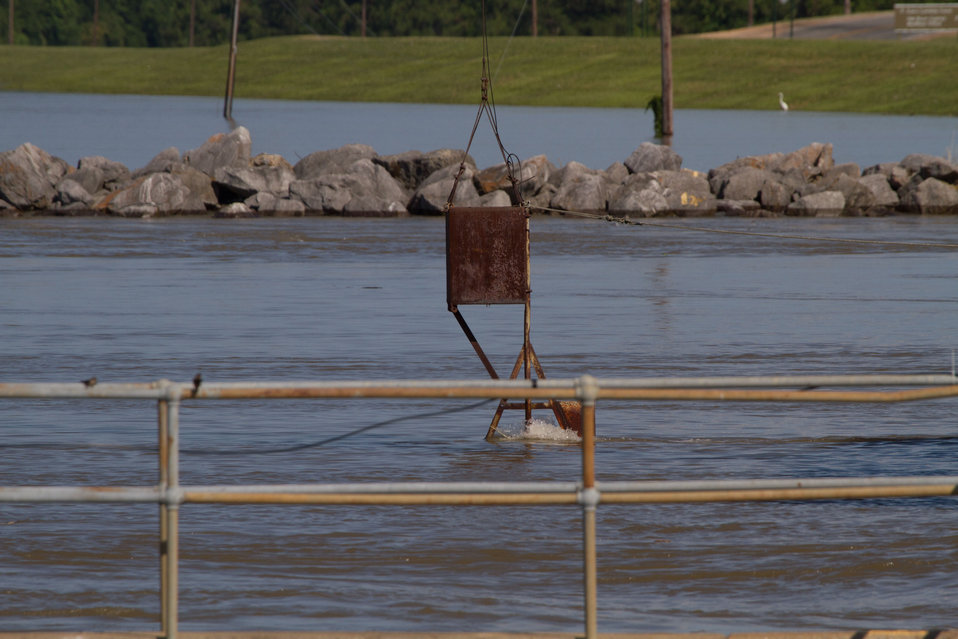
The Army Corps of Engineers conduct daily depth measurements along the intake side of The Old River Control Complex, Low Sill Structure in Concordia Parish, LA, on Tuesday, May 17, 2011. The measurements tell both the condition along the intake “ramp” and allow them to calculate the flow through the gates. The Old River Control Complex is designed to channel as much as 30 percent of the Mississippi River’s flow into the Gulf of Mexico through it’s eleven 44-foot wide gates across 566 foot span that separates the Mississippi and (the outflow channel to the) Red and Atchafalaya Rivers. Rated at 300,000 million gallons per minute (note: That’s more than seven Olympic sized swimming pools every second). Although this helps the Mississippi River, it (along with other concerns, puts back pressure on the Red River and other waterways, possibly causing some flooding of farms to avoid a catastrophic breech of the levee system. Most of the gates have been opened by a rolling crane and stored in racks. Debris, some as larger than telephone polls make their way through the gates and pool in eddies. The constant motion and contact with other objects, strip trees of their branches and bark. 20-30 pound Carp can frequently be seen jumping out of the white water.